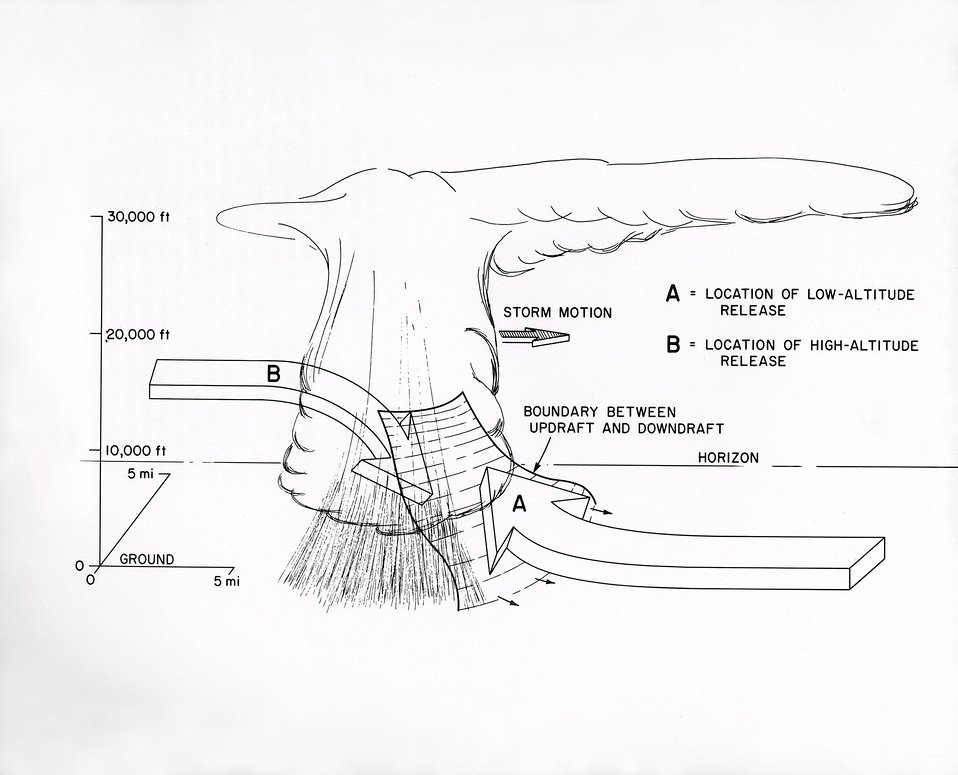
A schematic drawing of a typical thunderstorm studied during a series of precipitation savaging experiments conducted by the AEC Argonne.
c.1972